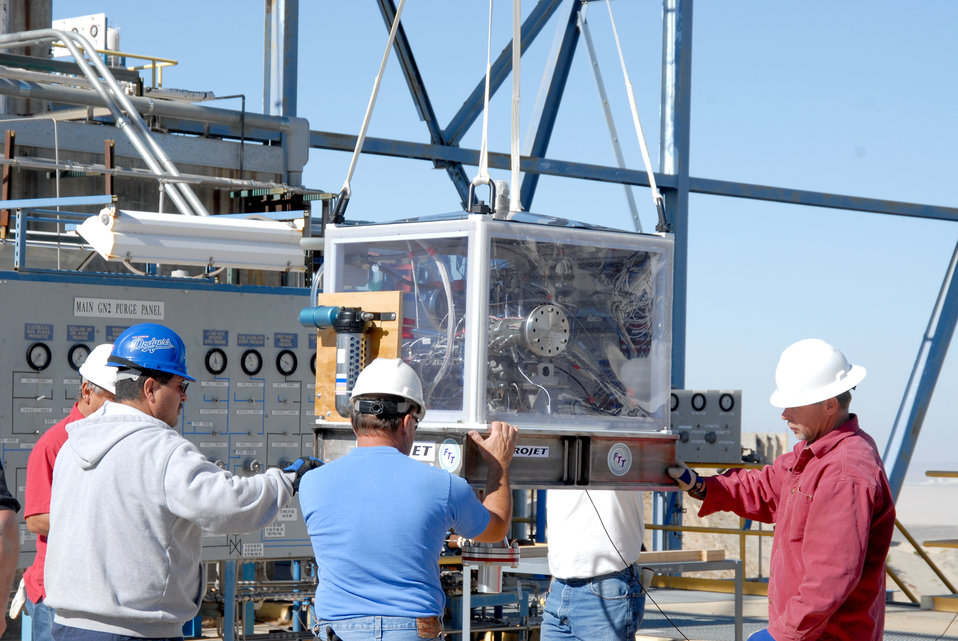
Air Force Research Laboratory officials launch new age in testing

Air Force Research Laboratory workers use a crane to remove a newly delivered Upper Stage Engine Technology turbo pump from its shipping crate. The USET turbo pump will be connected to AFRL's 2A rocket test stand where it will undergo a series of tests using liquid hydrogen.